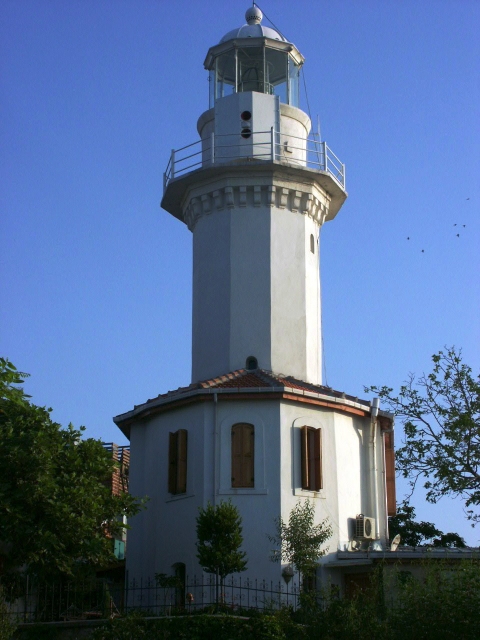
Yeşilköy Lighthouse in Turkey